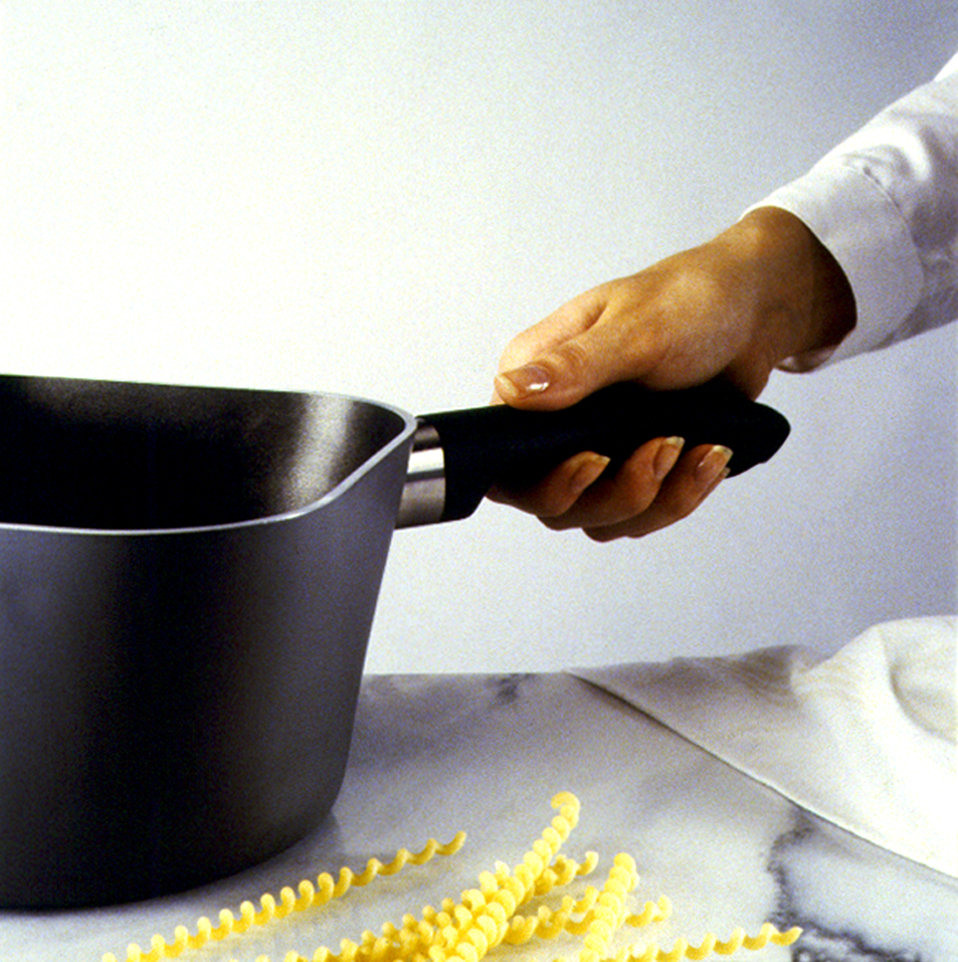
This was one of six images (PHIL# 9125 - 9130) depicting an Allegro� Cookware pot by Mirro�, the design of which was a radical departure from traditional cooking utensils. The square shape, unique lid and lightweight materials offered many ergonomic advantages. All the pots, pans and skillets were circular on their bottoms, gradually becoming square toward their tops. This cookware design made the most efficient use of standard round heat sources while at the same time offered greater cubic volume than a circular pot of the same height. Two of the corners created natural pouring spouts, a design consideration that was implemented in response to complaints common with more traditional round cookware. Handles located on the alternate two corners of the pot, aligned and interlocked with the lid handles providing safe and balanced handling.